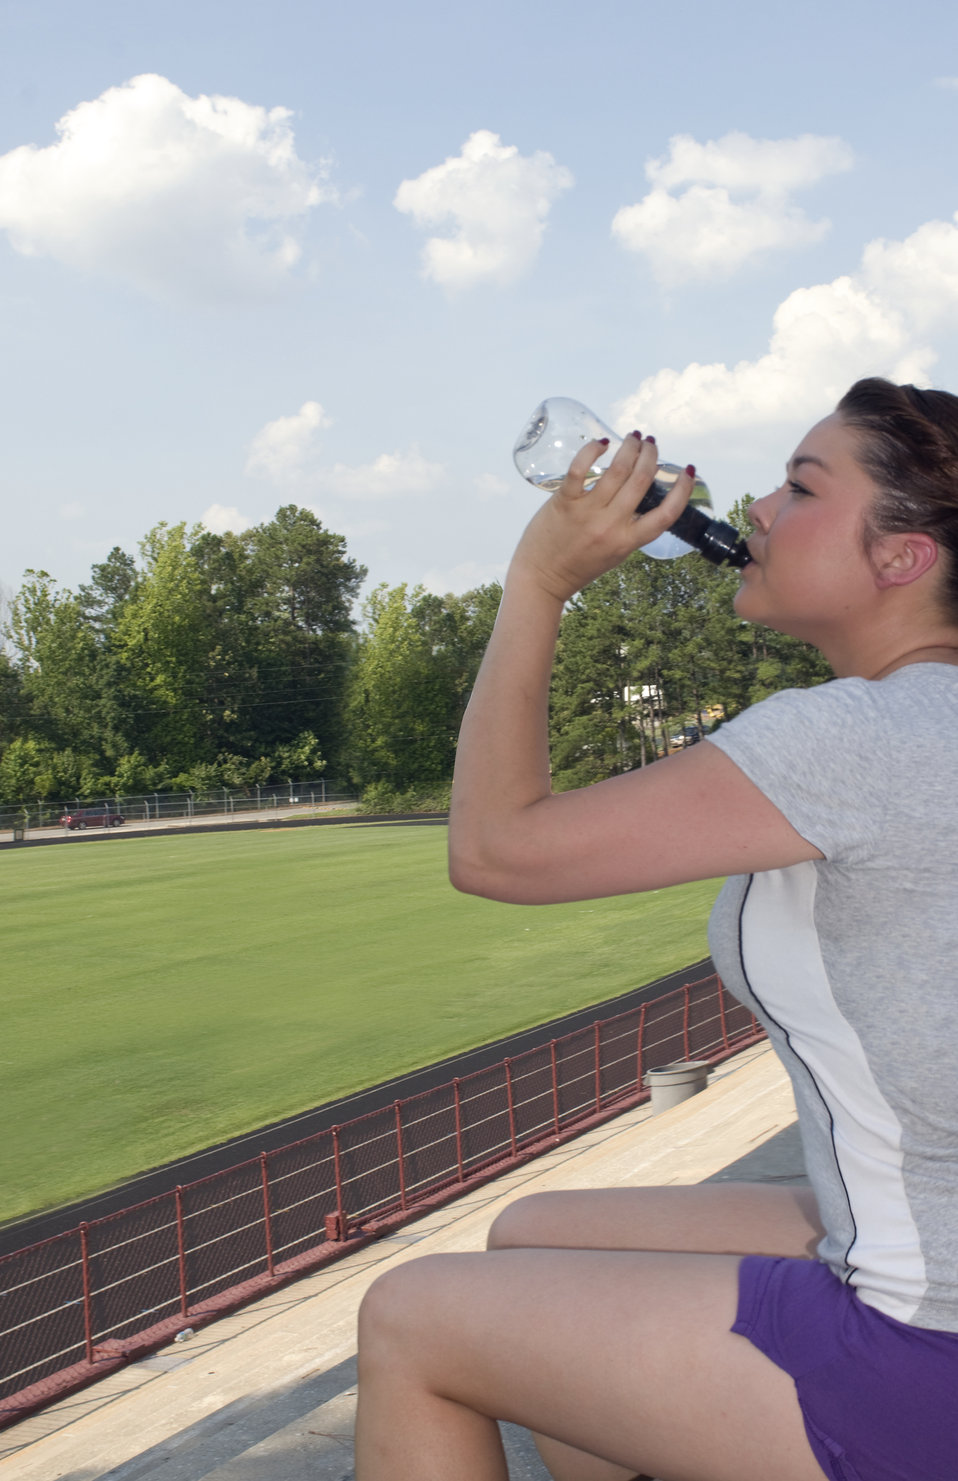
The young woman photographed here, was getting in some exercise time at a Georgia running track. At this moment, she had stopped to take a break, in order to drink some refreshing water from a bottle she'd brought with her from her home. This would help rehydrate her after a vigorous outdoor exercise routine. Hopefully, she'd applied sunscreen to her sun-exposed skin prior to her time outdoors at a this public park.